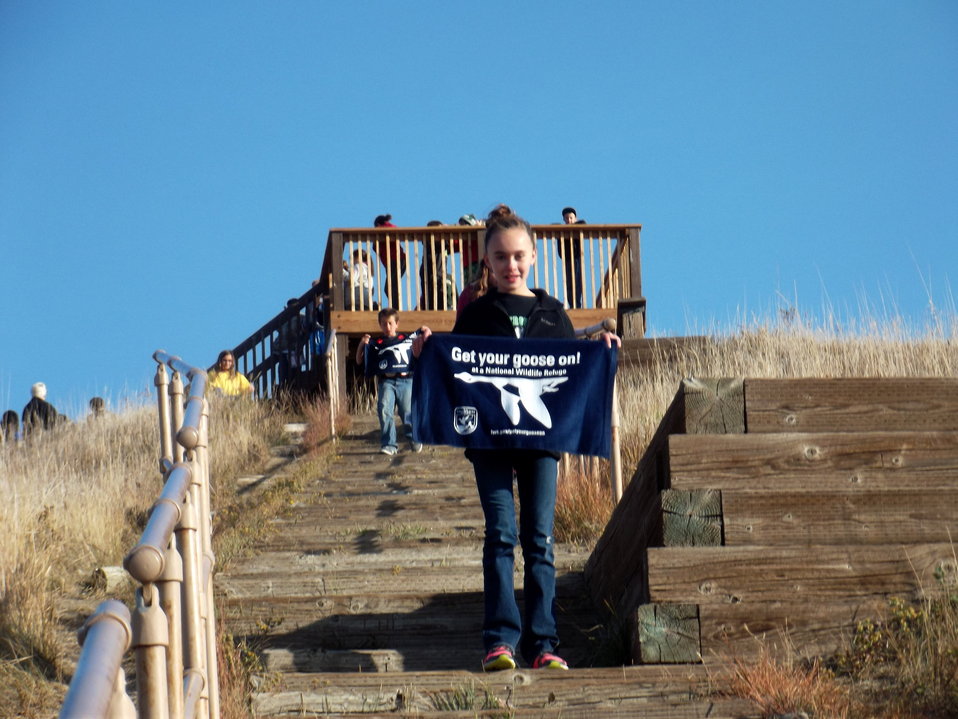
Get Your Goose On!

Photo taken at Sullys Hill National Game Preserve.